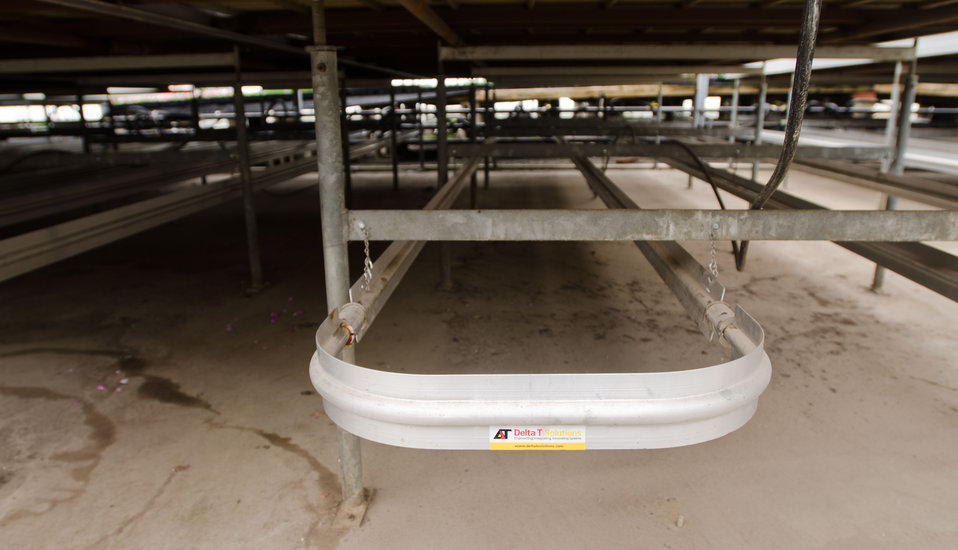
Water filled fin-tube heating element under plant tables at Good Harvest Farm on April 19, 2011 in Strasburg, PA, was completed using a Rural Energy for America Program (REAP) grant for the renovation six months ago that replaced an 80-year old structure with a new 4,000 sq. ft. structure that features energy efficient glass roof with curtains that block or trap heat, radiant heaters in or above the floor, and the replacement of an oil-fired hot-air furnaces with propane fueled boilers that supply fin-tube and cement embedded tube elements with hot water. With current fuel prices, there is a projected 2011 energy cost savings of more than $20,000; a 40% reduction in energy costs – exceeding projected savings. Plant health and quality has improved and been more consistent because the temperature and humidity is computer controlled and distributed evenly throughout the facility. Utilizing sensors and a roof mounted weather station the system can maintain four different climate zones 24-hours a day. Two 1,000,000 BTU propane fueled boilers heat the water to 190 degrees for the 8,000 feet of fin-tube heating elements were used where the original foundation, and the 8,000 feet of tubing that was embedded in a new cement foundation. After traveling through the energy efficient system, water only looses 20 degrees. When temperatures become to hot, motorized roof vents open to allow rising heat to escape; a 98% energy savings from massive fans that previously forced air out. Both systems create a microclimate in and round the plant trays in the growing and sales room. Representing Good Harvest Farm Chris Powell says, “You don’t need to have a lot of land to have a lot of green houses. There are places in cities where vegetables are grow on store roof tops and selling them below in the same structure.”